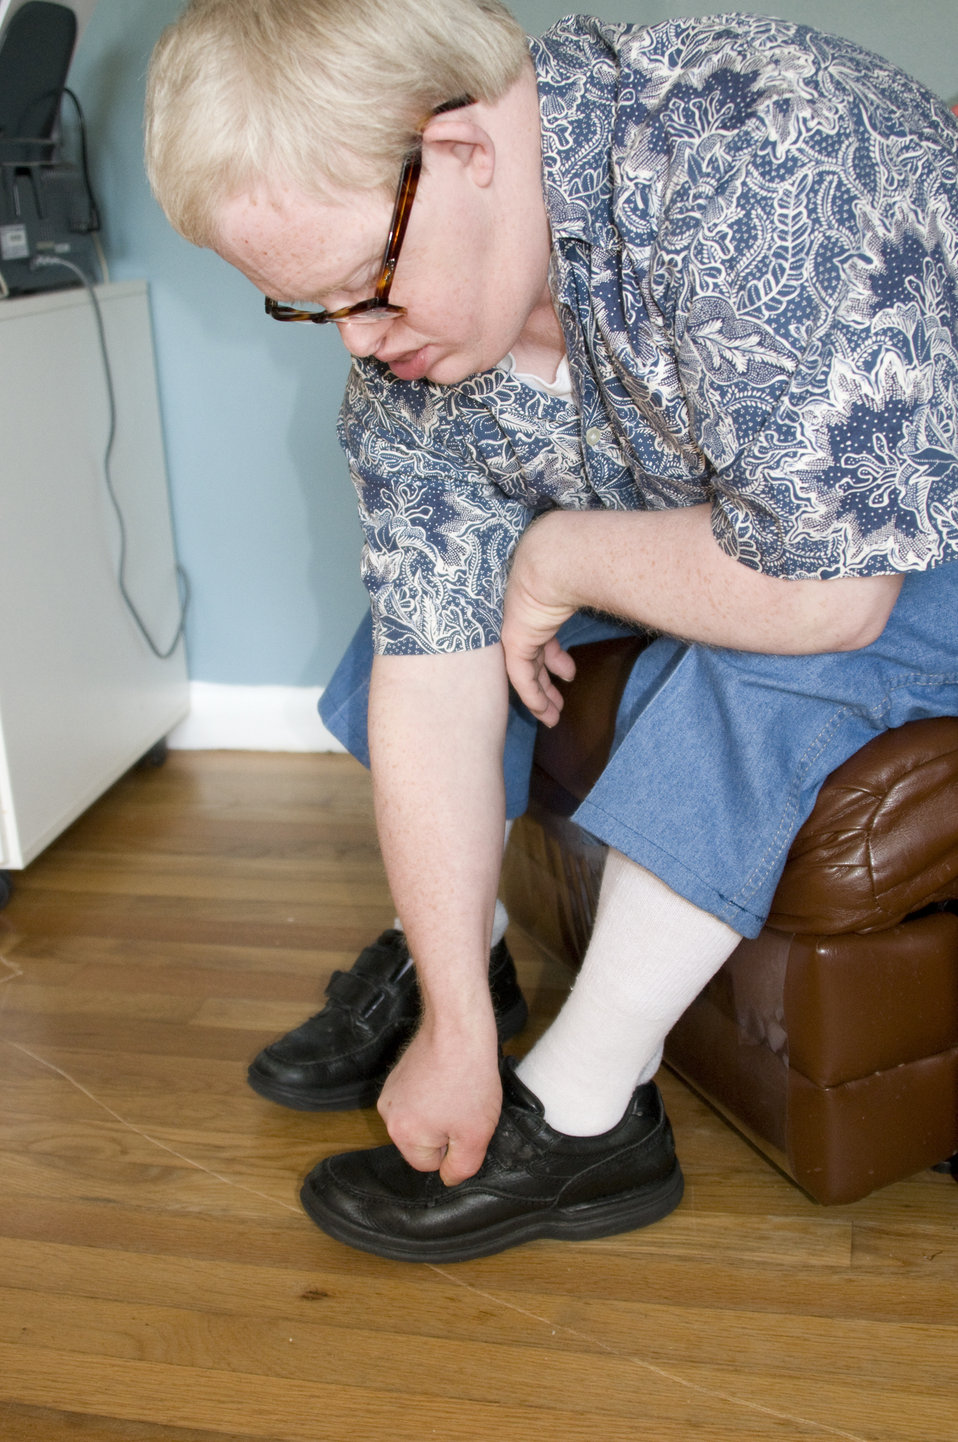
This image depicts an intellectually-challenged man in his home, sitting in a recliner, as he was putting on his shoes. He was already wearing his right shoe, and was adjusting the strap laces on his left shoe. Living with an intellectual disability does not necessarily mean existing in a non-functional state. There are many degrees of intellectual impairment ranging from an inability to function without assistance, to the ability to function independently, without assistance.